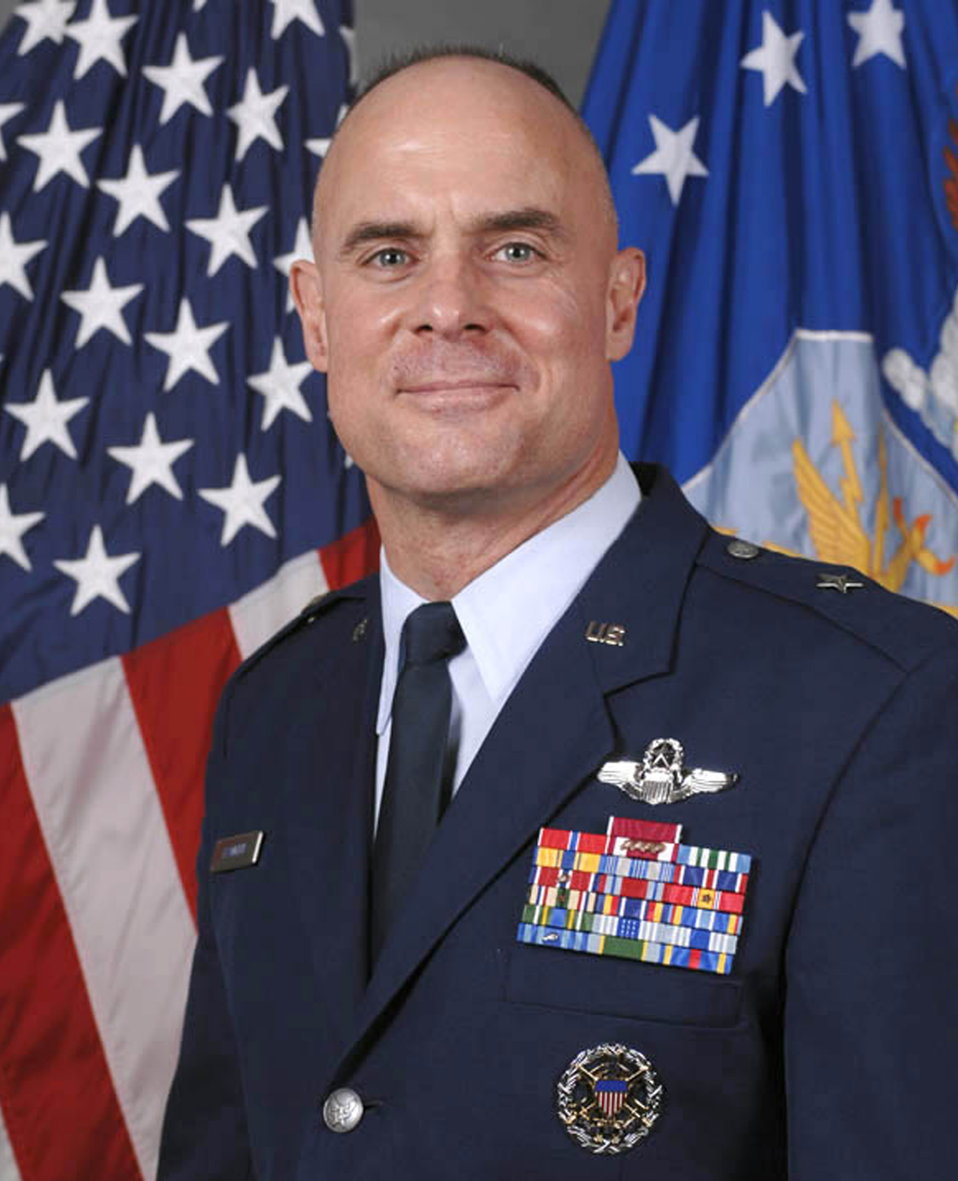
Brig. Gen. Craig Franklin

Brig. Gen. Craig A. Franklin, 31st Fighter Wing commander.